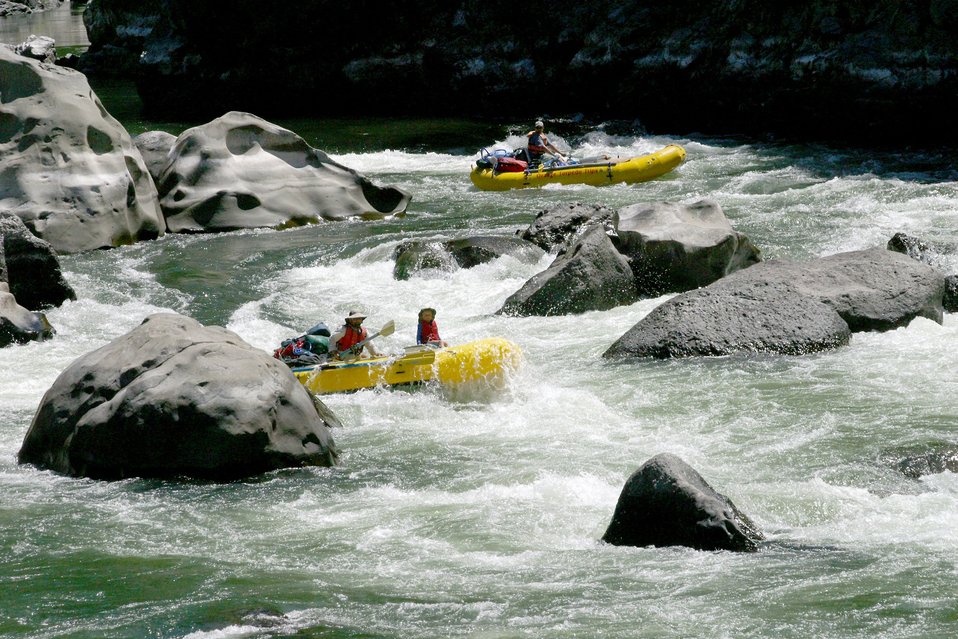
Boaters negotiate Blossom Rapids.